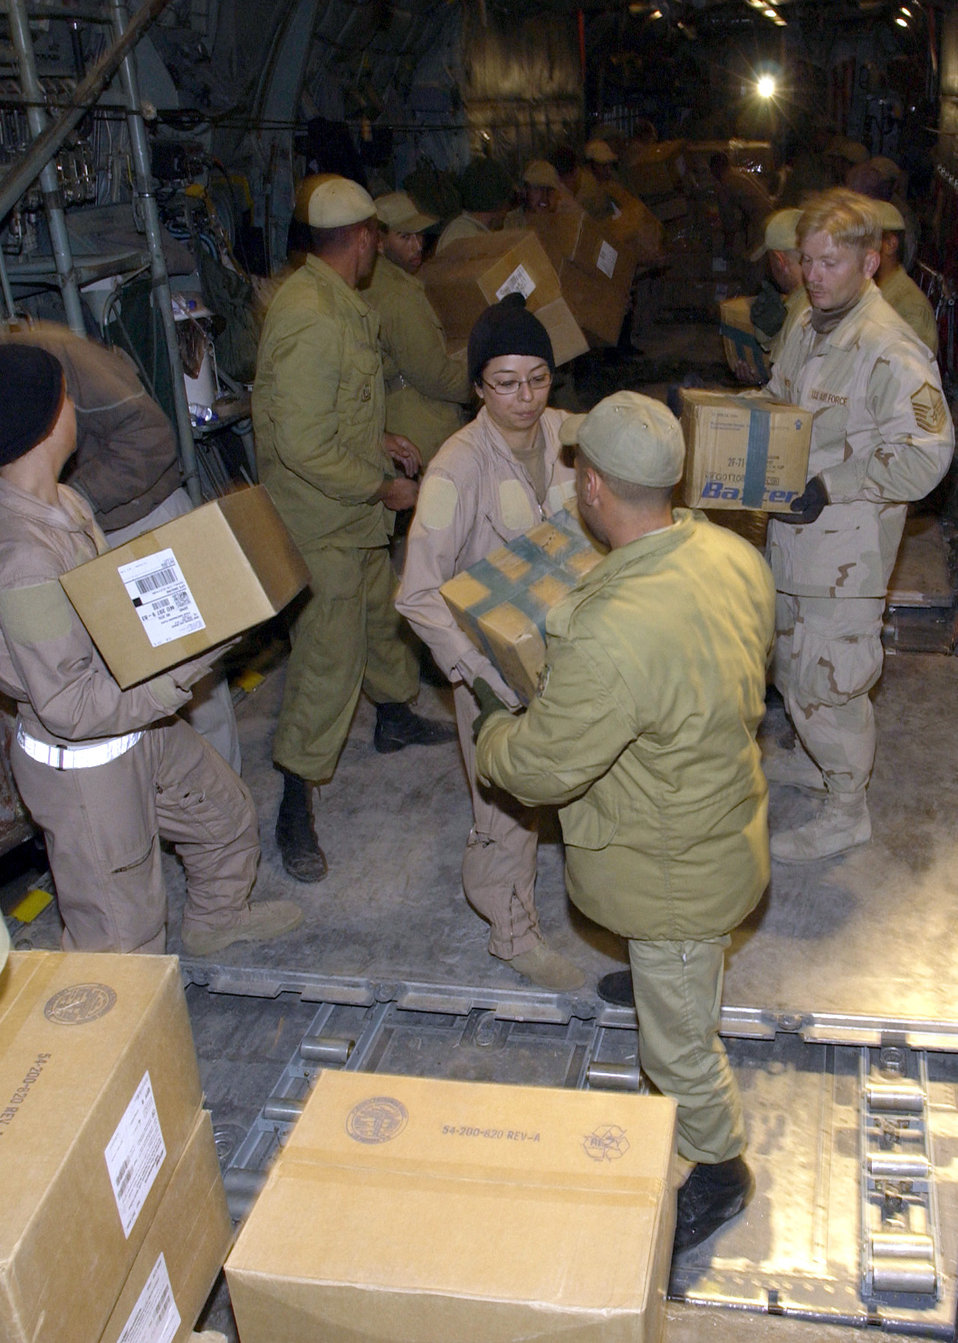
Providing humanitarian aid

KERMAN, Iran -- Crew members and Iranian soldiers offload supplies here Dec. 28 from an Air National Guard C-130 Hercules. The crew airlifted 20 pallets of humanitarian supplies to Iran after an earthquake destroyed the city of Bam.